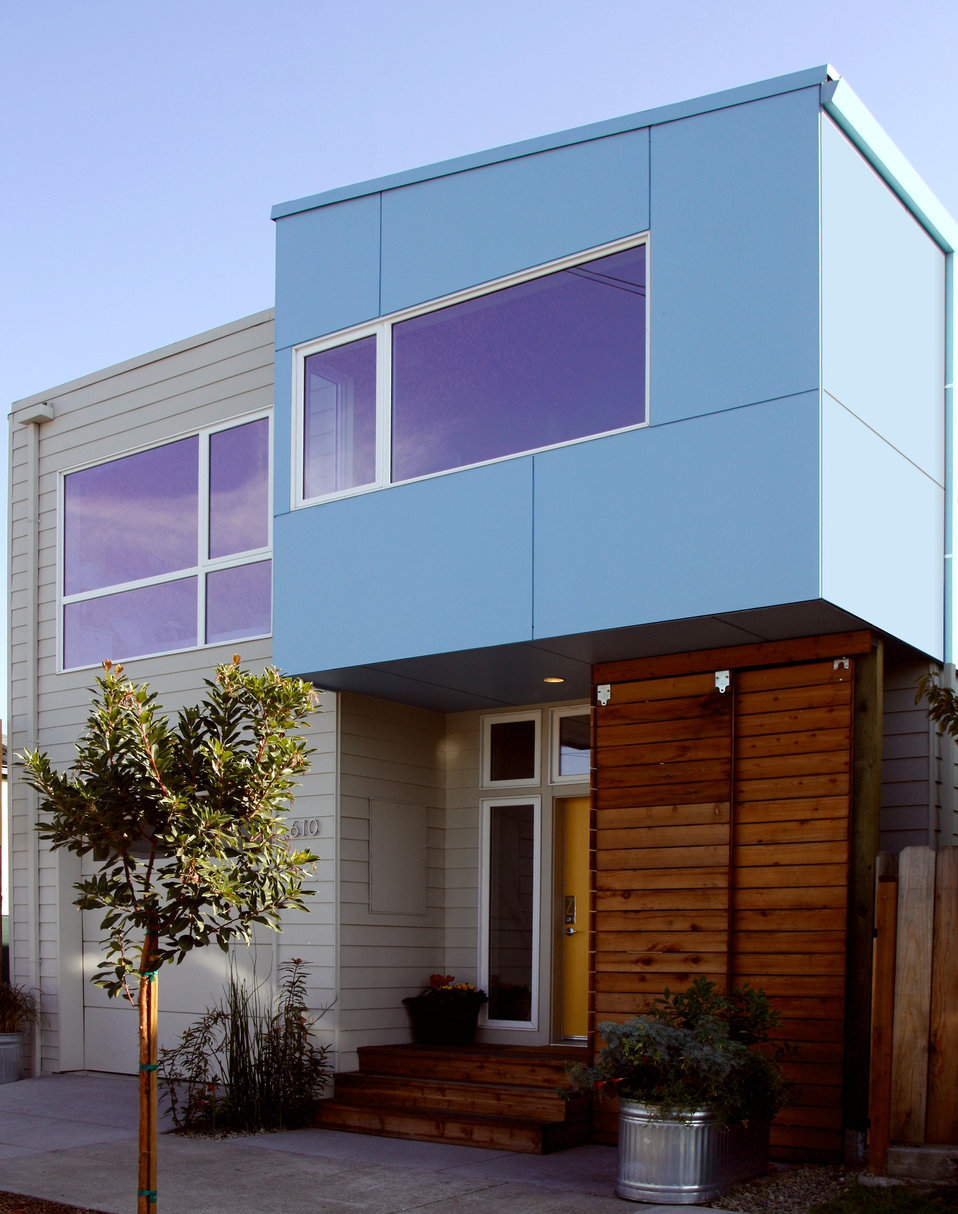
Green businesses

This energy efficient modular home, built by workers at ZETA Communities, won Green Builder magazine's home of the year award. ZETA's factory at the former McClellan Air Force Base, Calif., can produce two townhouses per day.